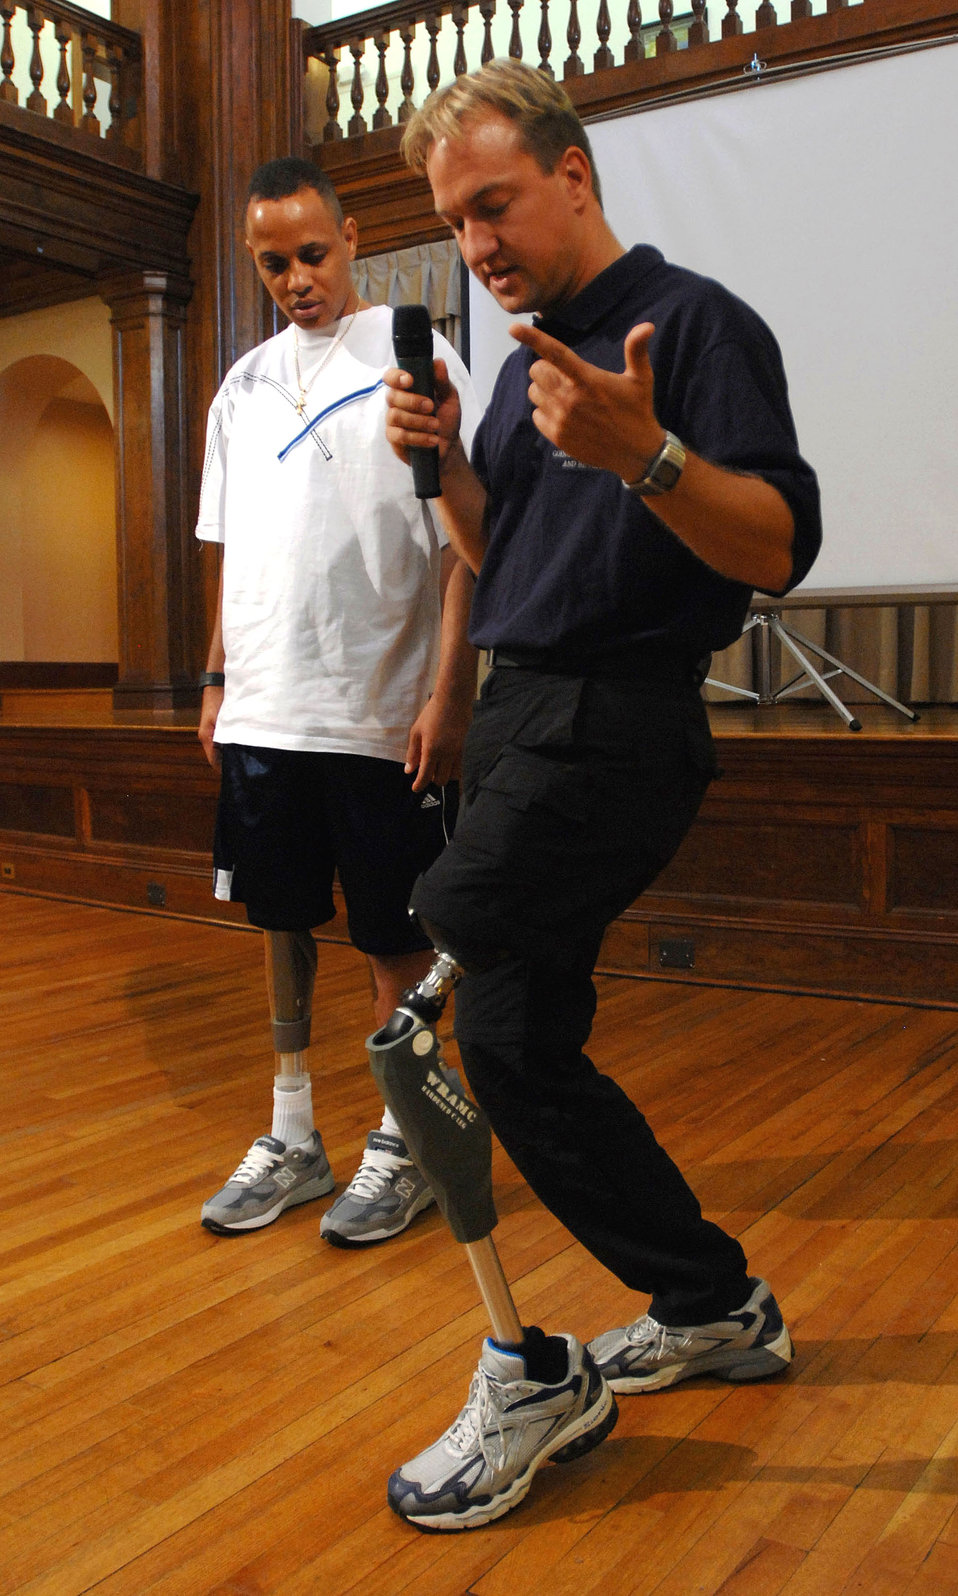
New prosthesis could help keep troops in the fight

Army Spc. Charles Parker looks on as Sven Zarling demonstrates the capabilities of a prototype prosthesis July 17 designed to give above-the-knee amputee servicemembers the mobility they need to remain on active duty if they choose. The prosthesis uses a microprocessor to control the knee's hydraulic functions and can anticipate the wearer's actions and make changes in real time. Mr. Zarling is from Otto Bock HealthCare, the company developing the new prosthesis.